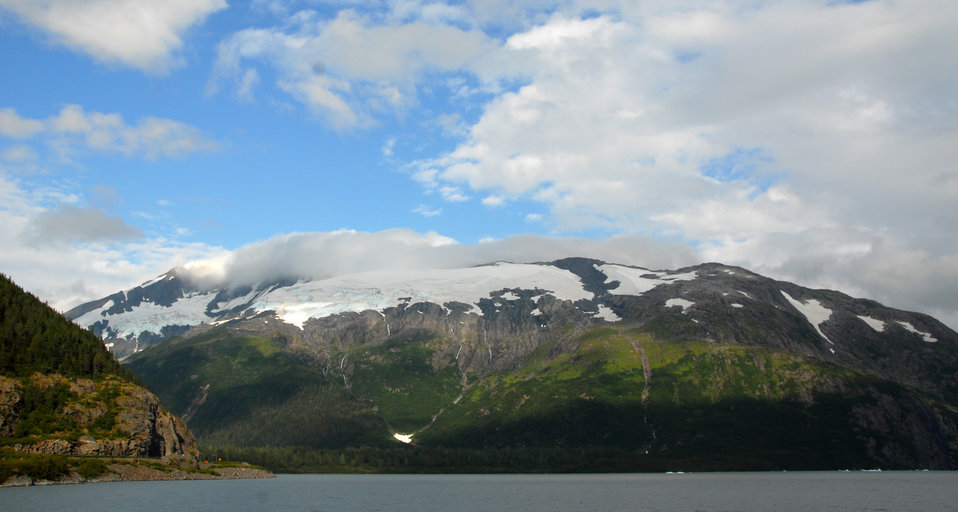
Rural Tour 0073